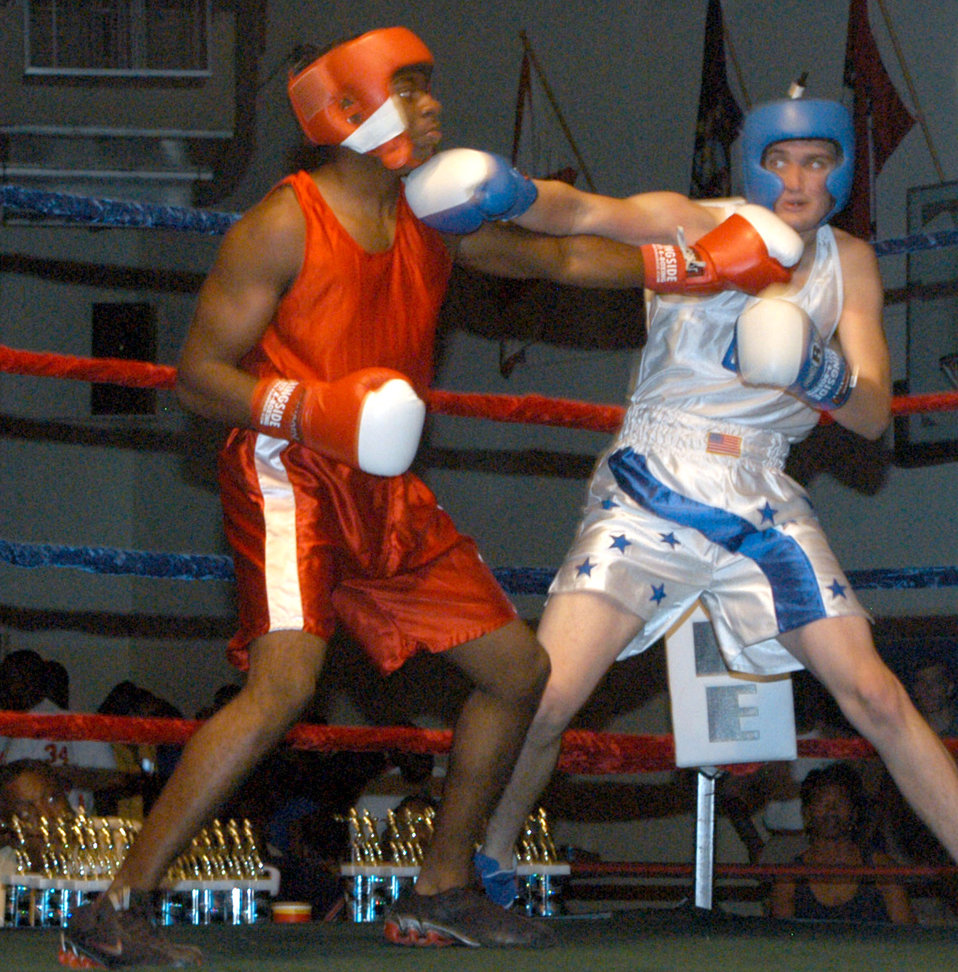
Airmen, Soldiers compete during boxing tourney

Vincent Matheny, representing U.S. Army Garrison Yongsan, delivers a punishing upper cut to Kunsan Air Base's Amon Wester during the 2007 summer Smoker Boxing Tournament Aug. 11at USAG Humphreys. Wester went on to defeat Matheny with a knockout in round two.